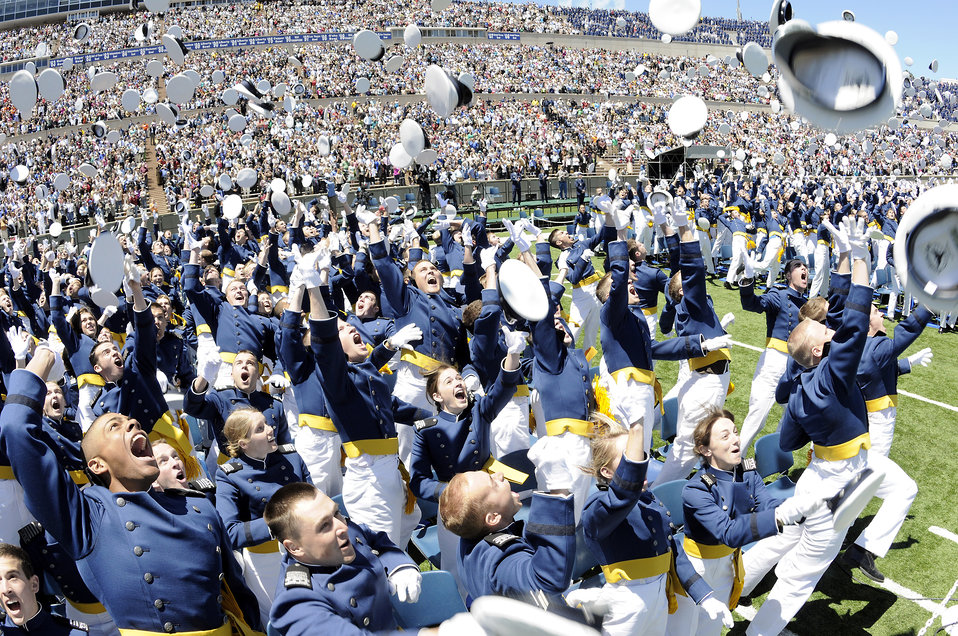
2009 U.S. Air Force Academy graduation

The 1,046 newly commissioned second lieutenants at the U.S. Air Force Academy commemorate their achievement by tossing their hats as the Air Force Thunderbirds fly over Falcon Stadium May 27.